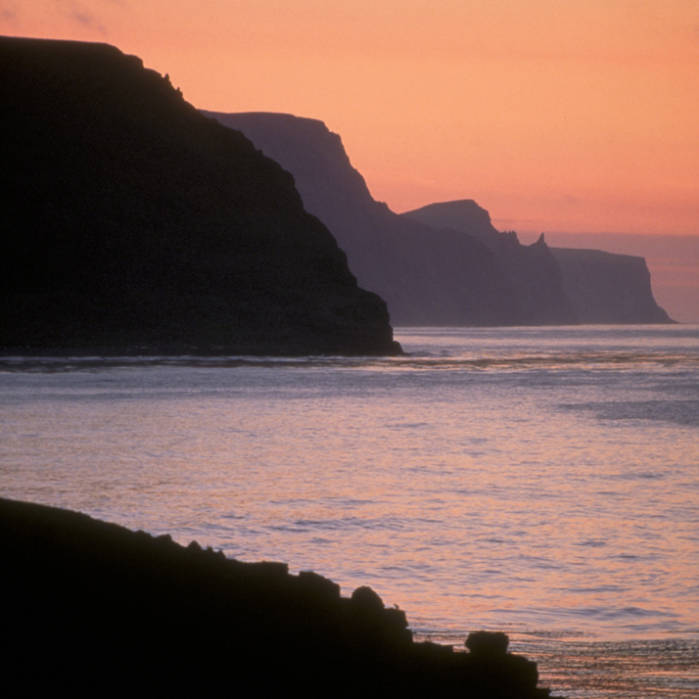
St. George Island sunset

Alaska Maritime National Wildlife Refuge